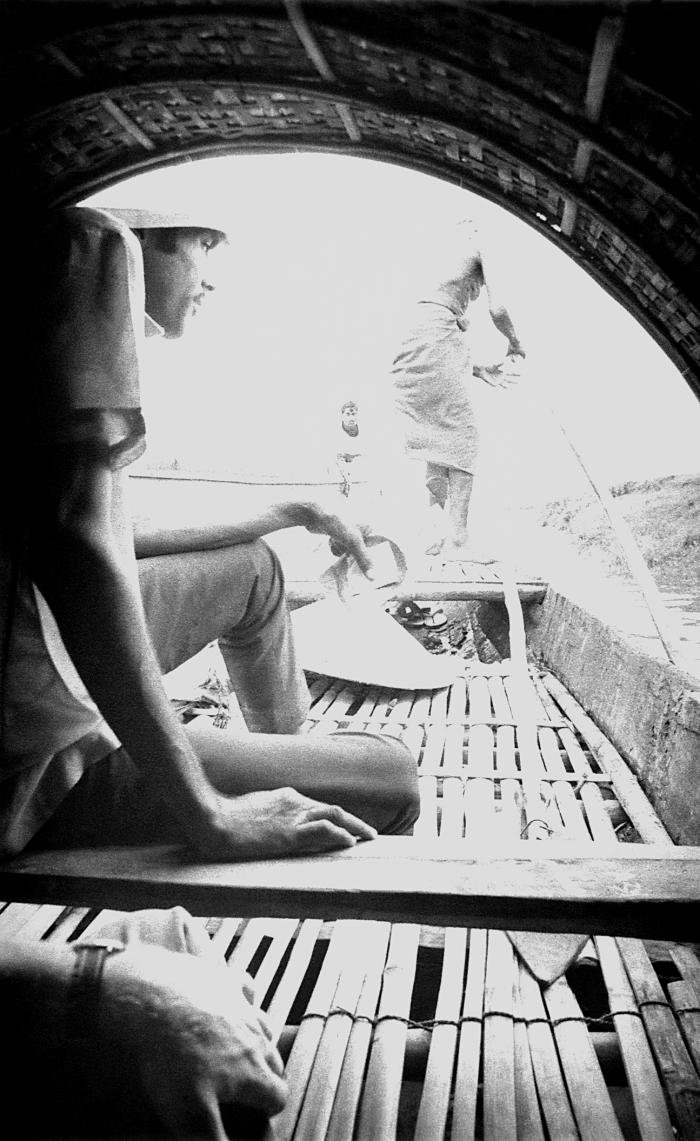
While in search of any possible smallpox cases on his designated route, this Bangladesh volunteer smallpox eradication team vaccinator was traveling by river boat to his next destination. The 'searchers' would use whatever modes of travel were available in order to complete their journeys from village to village. This pole-driven river boat was, but one water craft available. There were also motor powered boats known as 'river taxis', which were able to transport more passengers. The Bangladesh riverine culture made these modes of transport integral to the daily lives of most villagers.